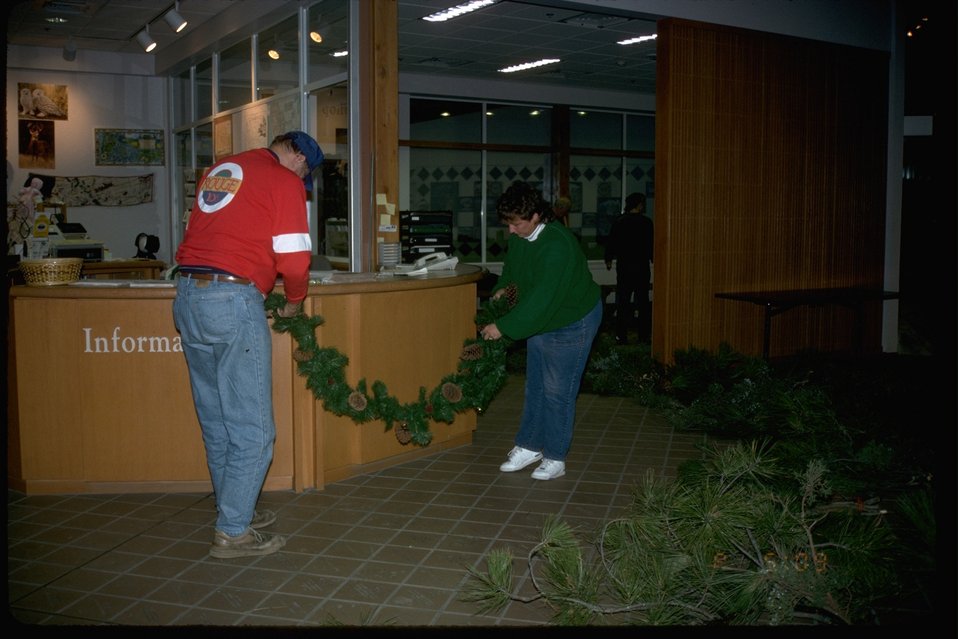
Volunteers decorating for holiday Open House at the NHOTIC.